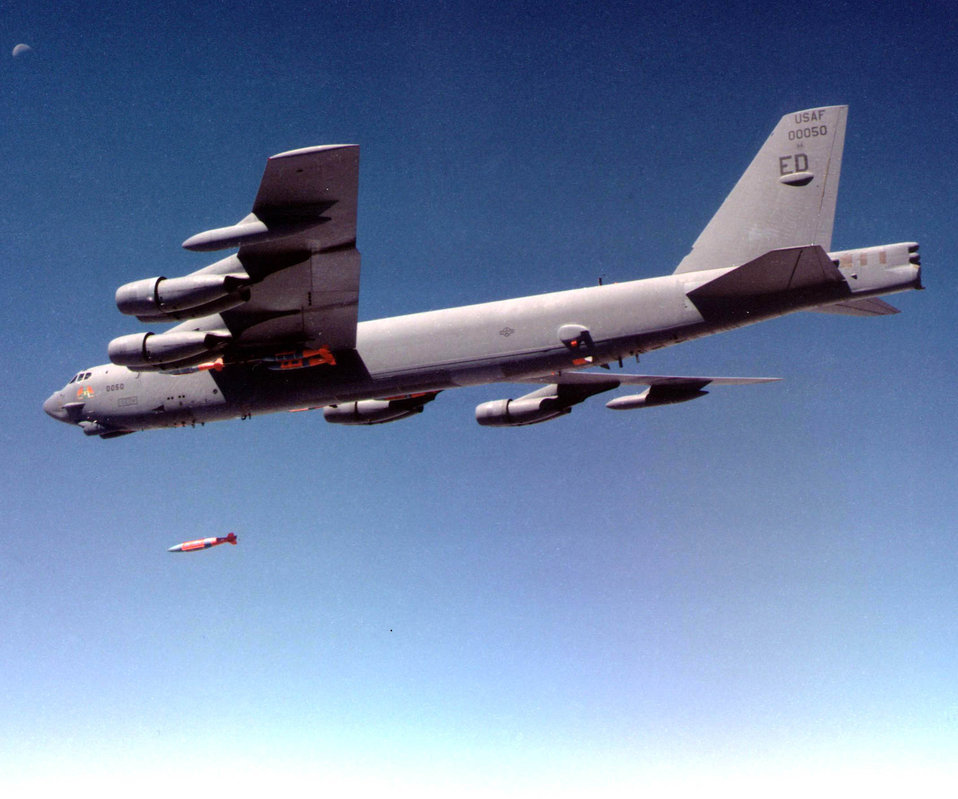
Buff lauches JDAM

FILE PHOTO -- A B-52H Stratofortress from the 419th Flight Test Squadron from Edwards Air Force Base, Calif., releases a Joint Direct Attack Munition during a recent test.